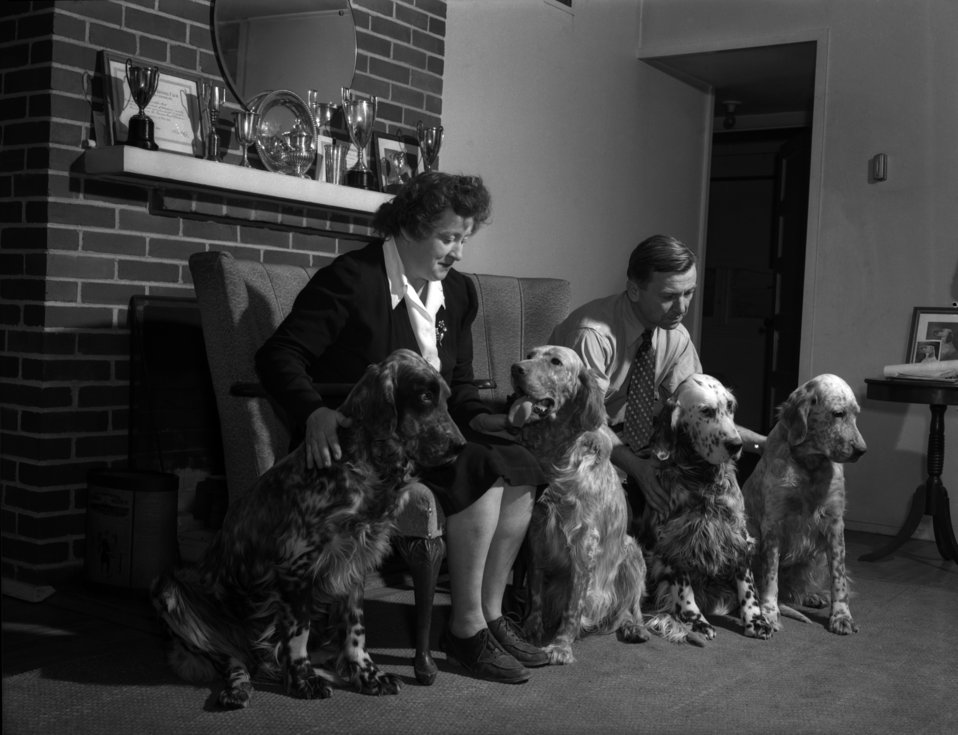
Mr. and Mrs. Tirpak and Dogs Oak Ridge

3347-2k DOE Photo Ed Westcott 3-1947 Oak Ridge Tennessee